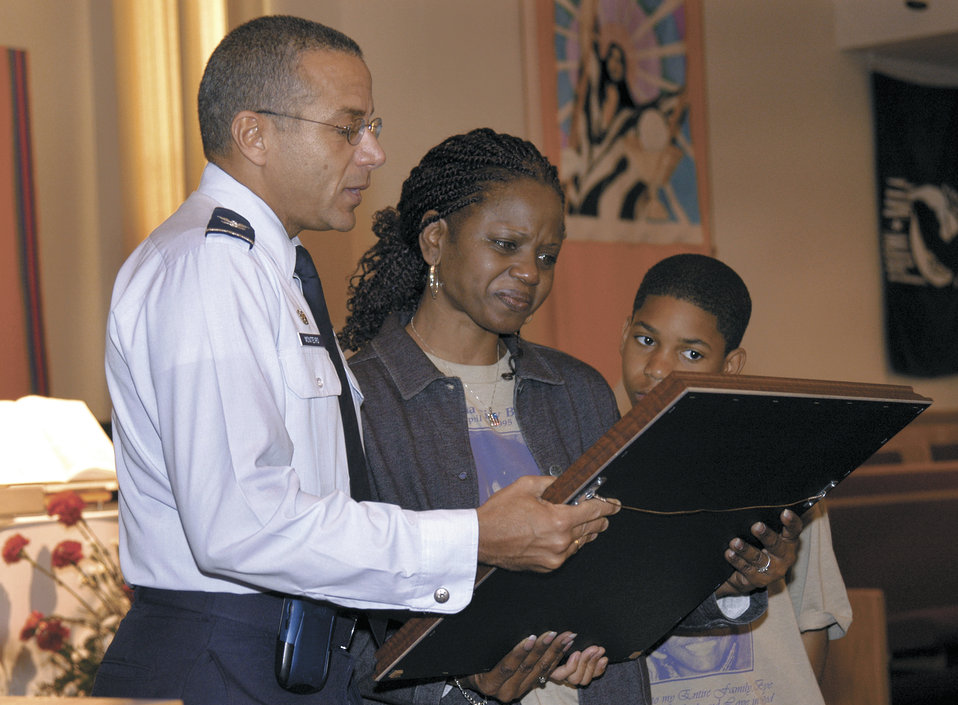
Airmen killed in Oklahoma City bombing remembered

TINKER AIR FORCE BASE, Okla. -- Col. Andrew Monteiro Jr. presents Constance Favorite with a plaque showing the medical group's memorial to her daughter, Airman 1st Class Lakesha Levy, who was killed in the Alfred P. Murrah Federal Building bombing April 19, 1995. Airman Levy worked in the base laboratory, but was visiting the Oklahoma City federal building when it exploded. Along with Airman Levy's mother, about 50 family members, including her 12-year-old son, Corey Levy (pictured), visited here April 18 to see the base's bombing memorial, attend a service at the base chapel and see the lab where Airman Levy worked. Colonel Monteiro is the 72nd Medical Group commander.